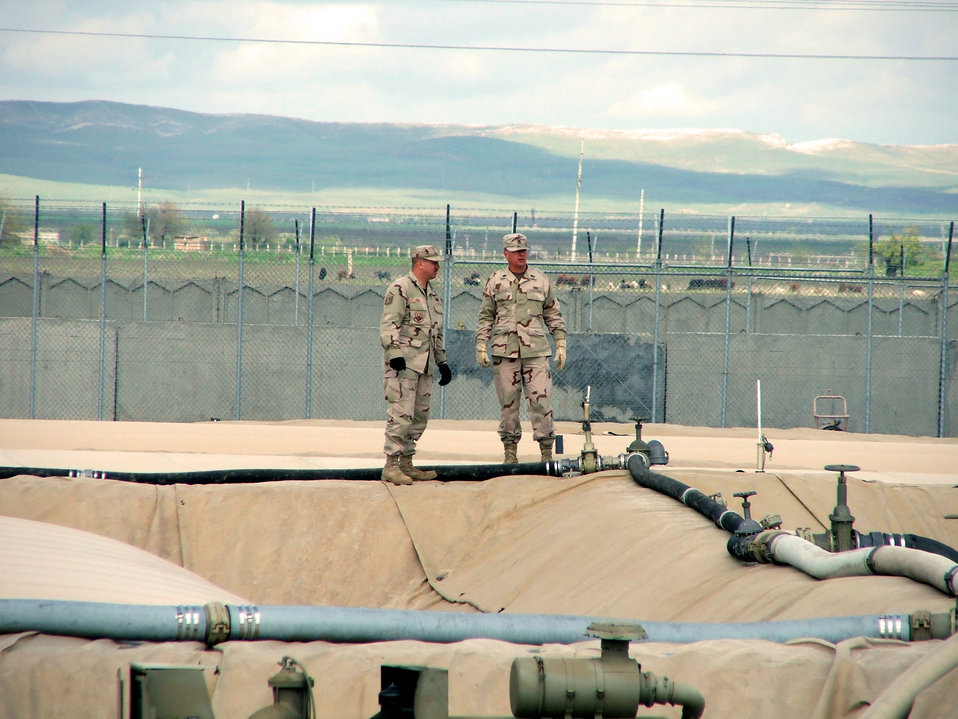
Joint fuels effort allows OEF airlift to keep rolling in Uzbekistan

KARSHI-KHANABAD, Uzbekistan -- Master Sgt. Scott Ross (left) and Army Sgt. 1st Class Gustave Bloom stand atop a fuel storage unit here. Sergeant Ross is the 416th Expeditionary Mission Support Squadron's fuels management flight superintendent, and Sergeant Bloom is the fuels accountability officer for Logistics Task Force 191 here.